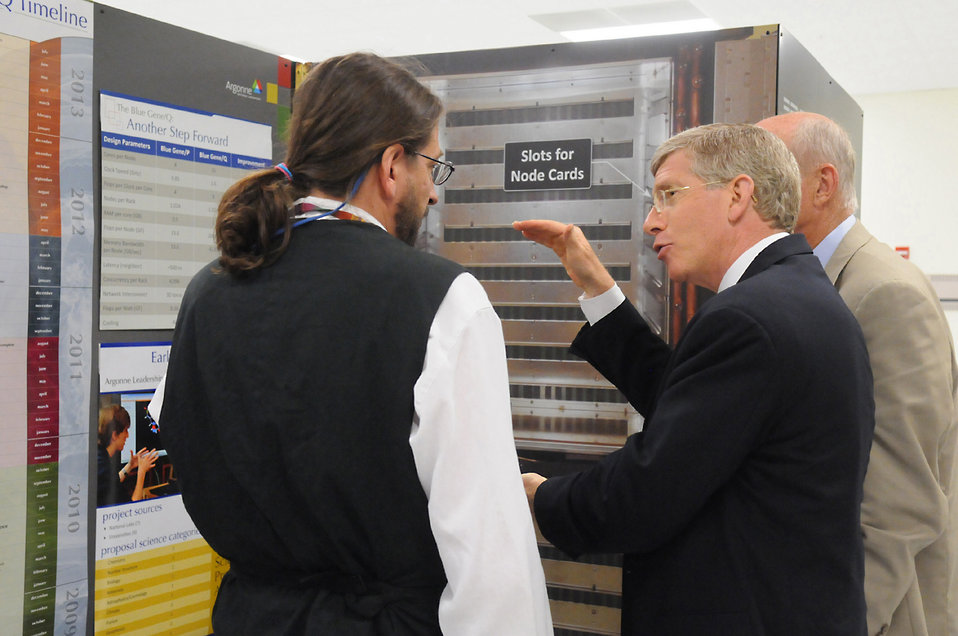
Future home of IBM Blue Gene / Q

Argonne's Rick Stevens meets with Deputy Secretary of Energy Daniel Poneman to discuss plans for our next generation supercomputer, the IBM Blue Gene / Q